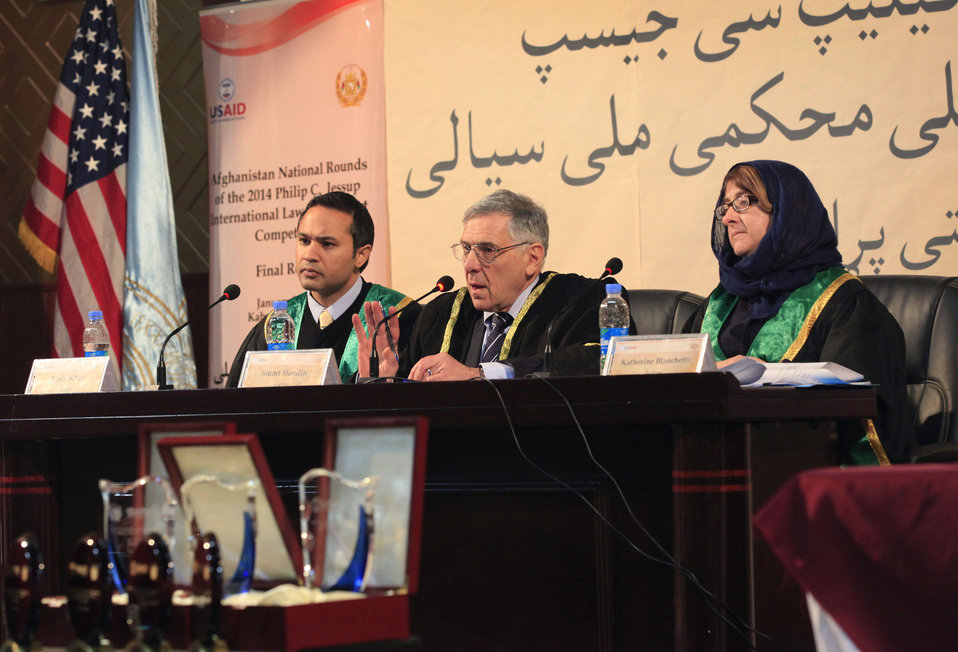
International Law Moot Court Competition 2014